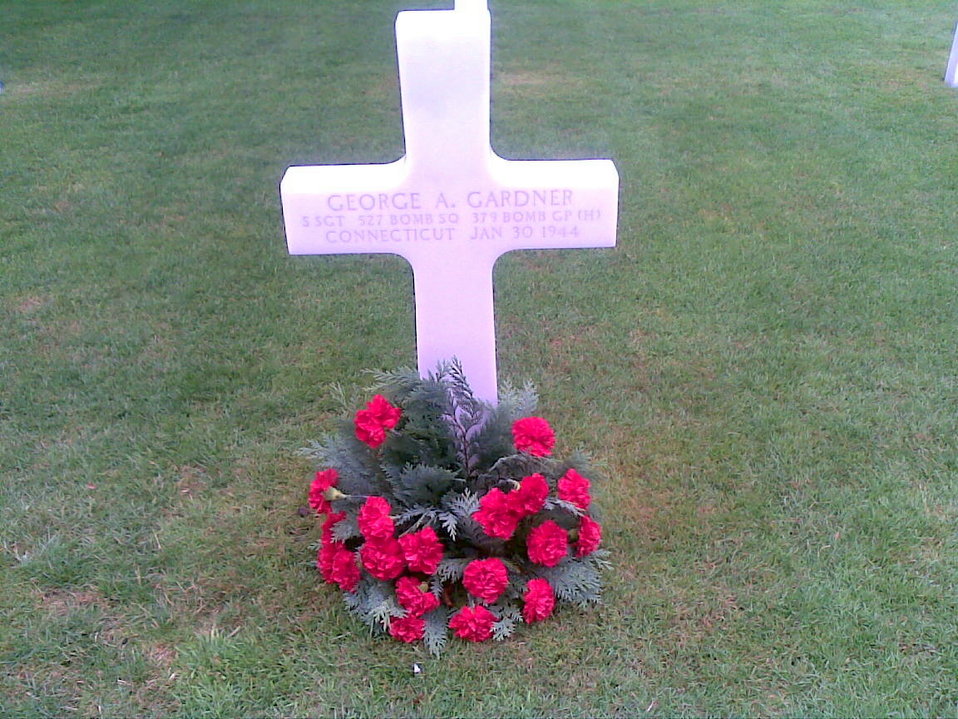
Deutsch: Netherlands American Cemetery, Grabstätte mit christlichem Kreuz